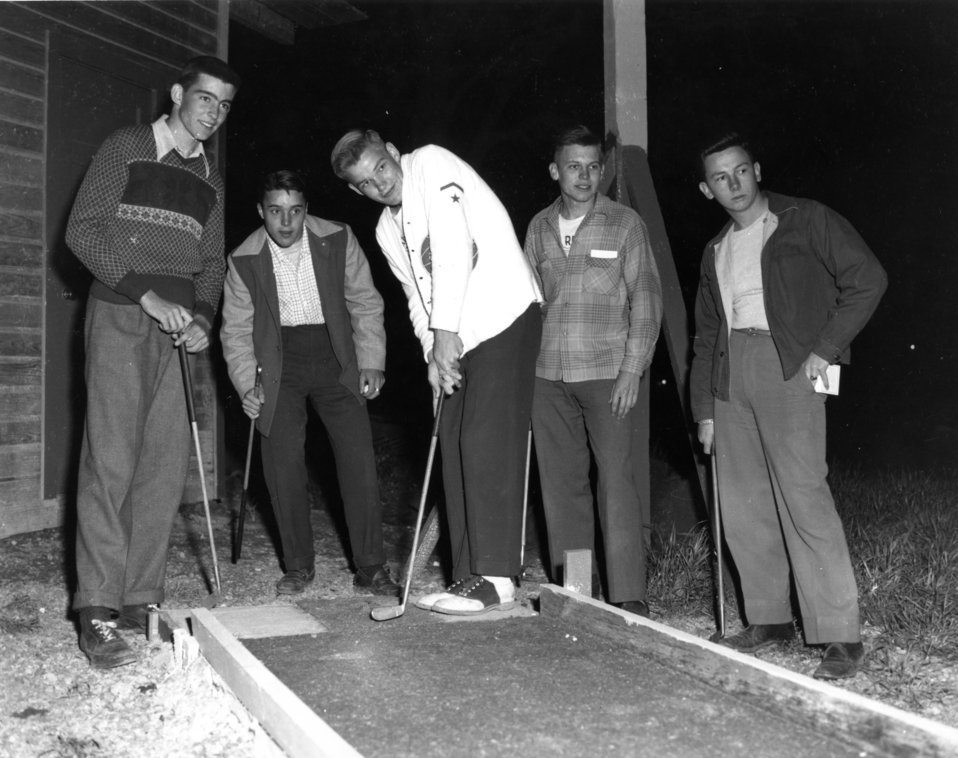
Recreation at Oak Ridge